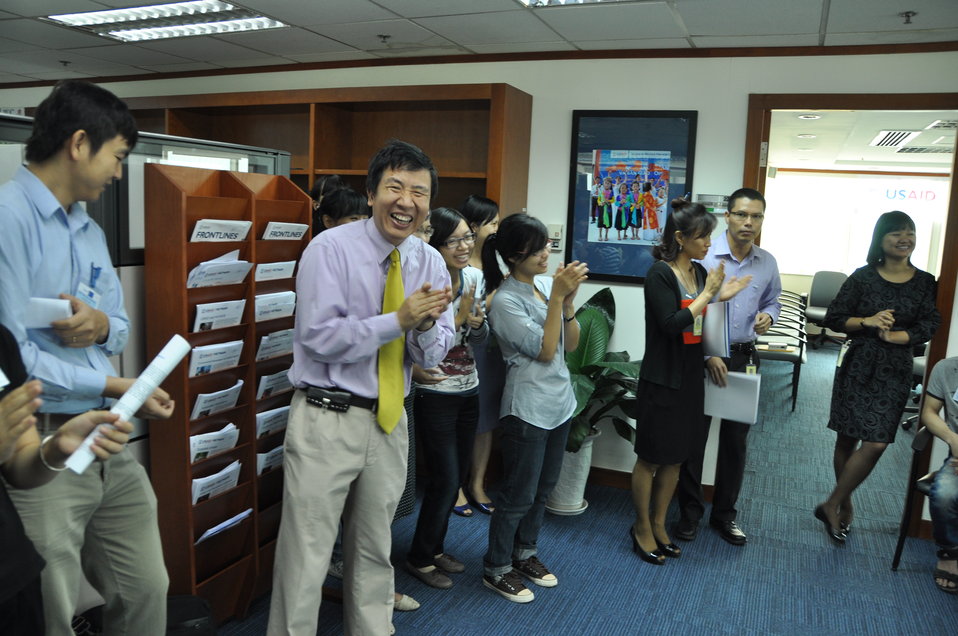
USAID 50th Anniversary Open House, USAID Vietnam